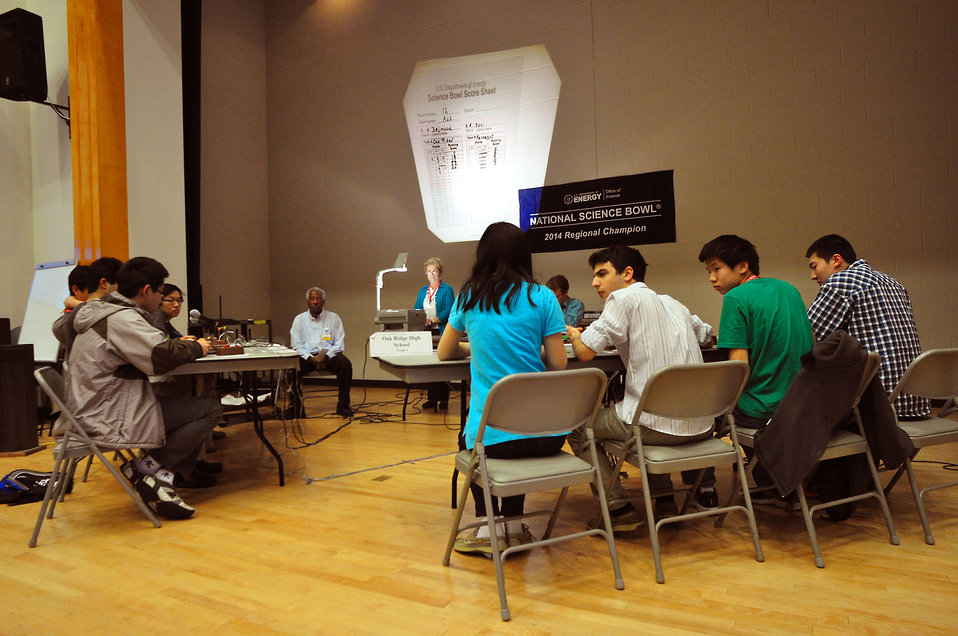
Farragut and Oak Ridge 2014 TN DOE Science Bowl

DOE photo Lynn Freeny 2-22-2014 Pellissippi State Blount Campus